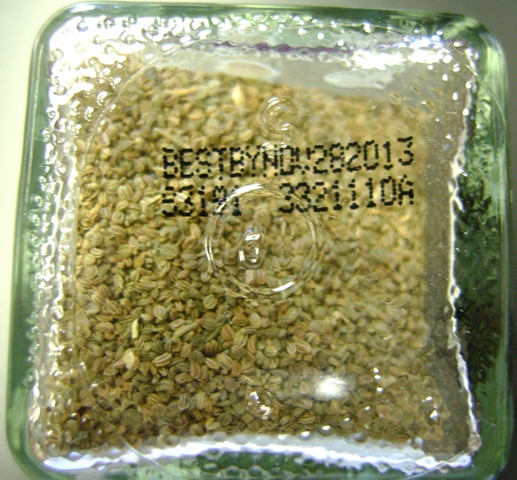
RECALLED - Organic Celery Seed

December 16, 2011 - Product Recall - B&M, Inc. Conducts A Voluntary Recall Of O Organics Organic Celery Seed Sold At Safeway Nationwide Due To Possible Salmonella Contamination.